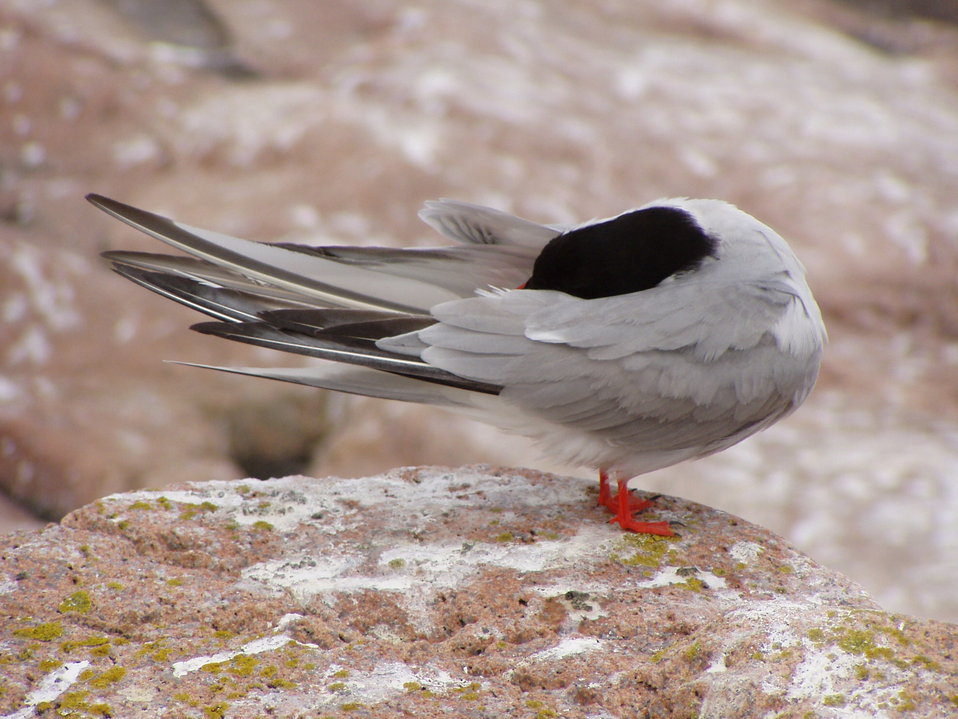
Common tern preening at Maine Coastal Islands National Wildlife Refuge